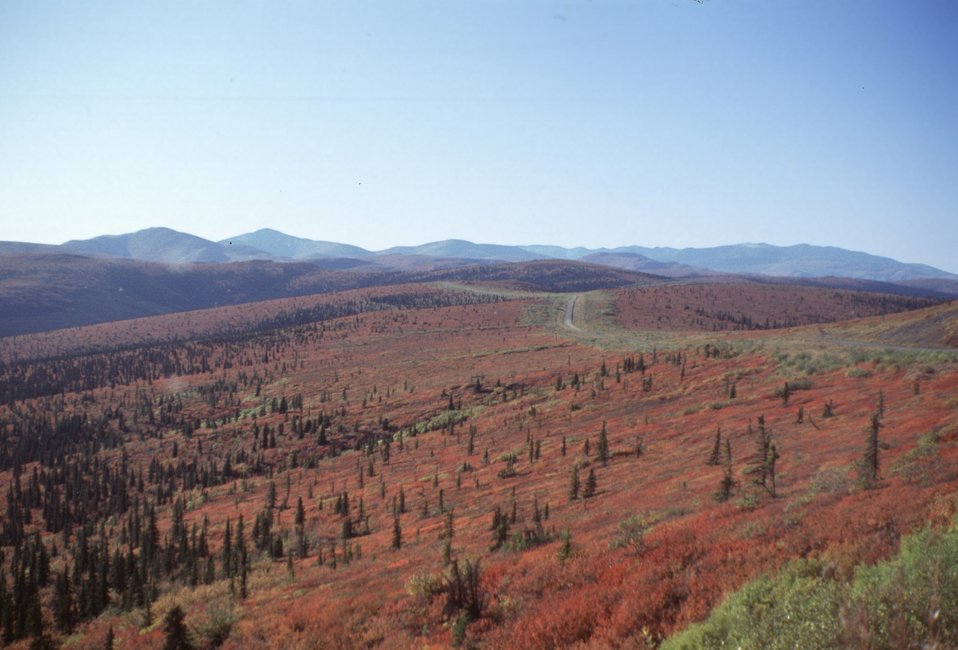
Fall colors along Taylor Highway, Alaska